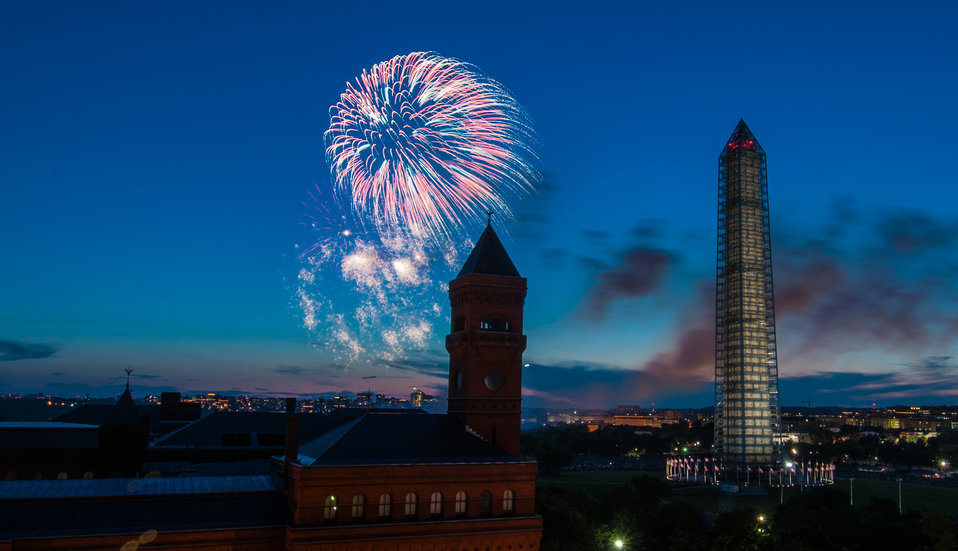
4th of July fireworks as seen from the U.S. Department of Agriculture (USDA) headquarters building, with the USDA Forest Service Yates Building in the foreground, left, and the Washington Monument in Washington, D.C., on July 4, 2013.